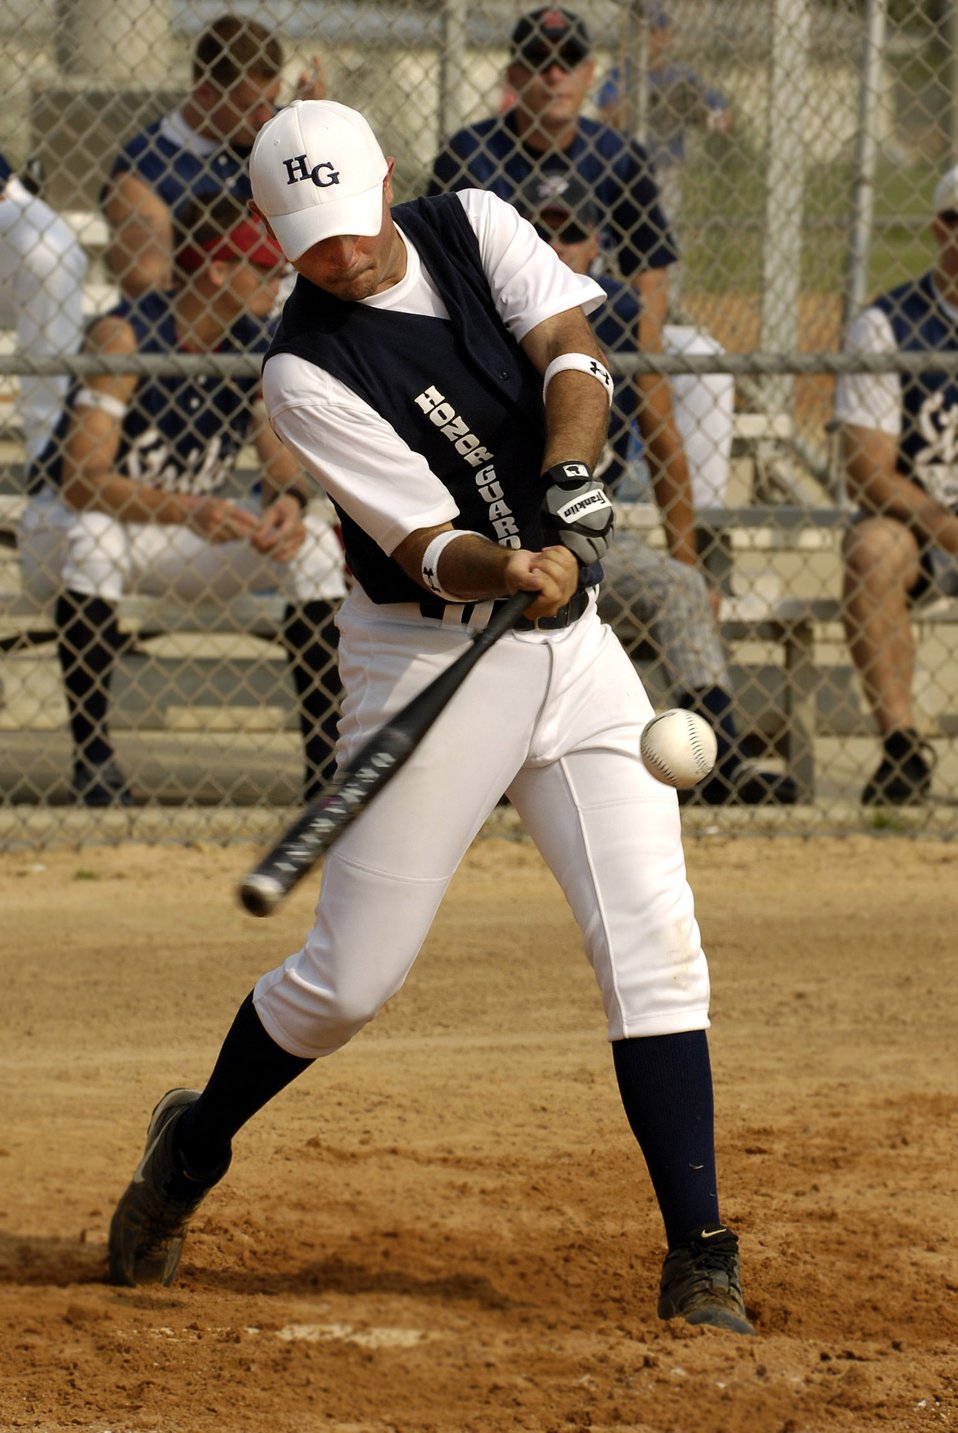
Taking on the world

PANAMA CITY BEACH, Fla. -- Wes Brin hits a line drive into center field against the Fort Knox Red Knights during the 2005 World Military Championship softball tournament here Aug. 19 to 21. Honor Guard fell 8-6 against the Red Knights from Kentucky. More than 60 military men's and women's intramural and varsity teams competed in the tournament.